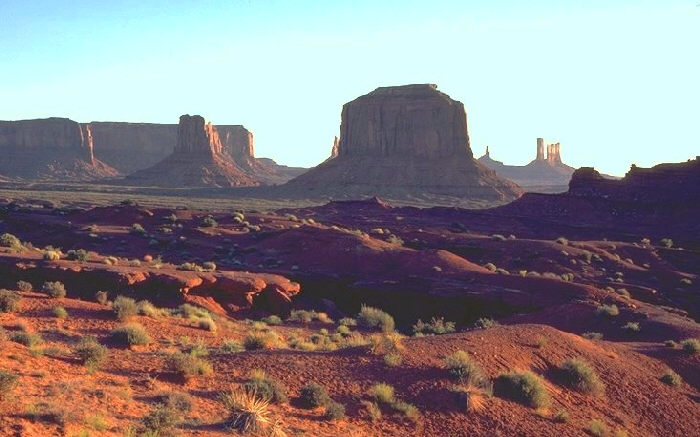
Monument Valley, Utah